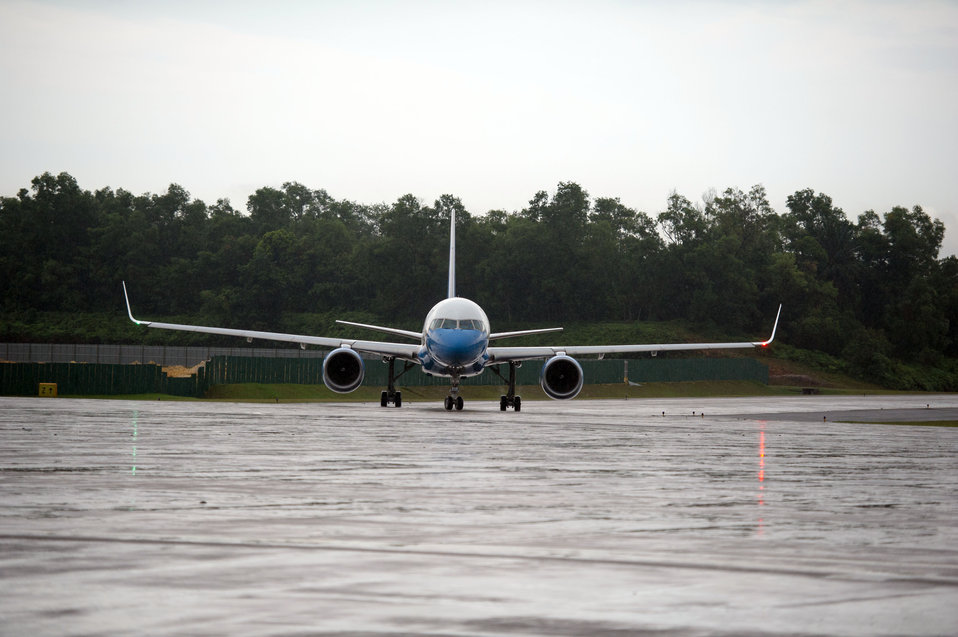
Secretary Kerry Arrives in Kuala Lumpur, Malaysia

U.S. Secretary of State John Kerry arrives in Kuala Lumpur, Malaysia, on October 10, 2013.